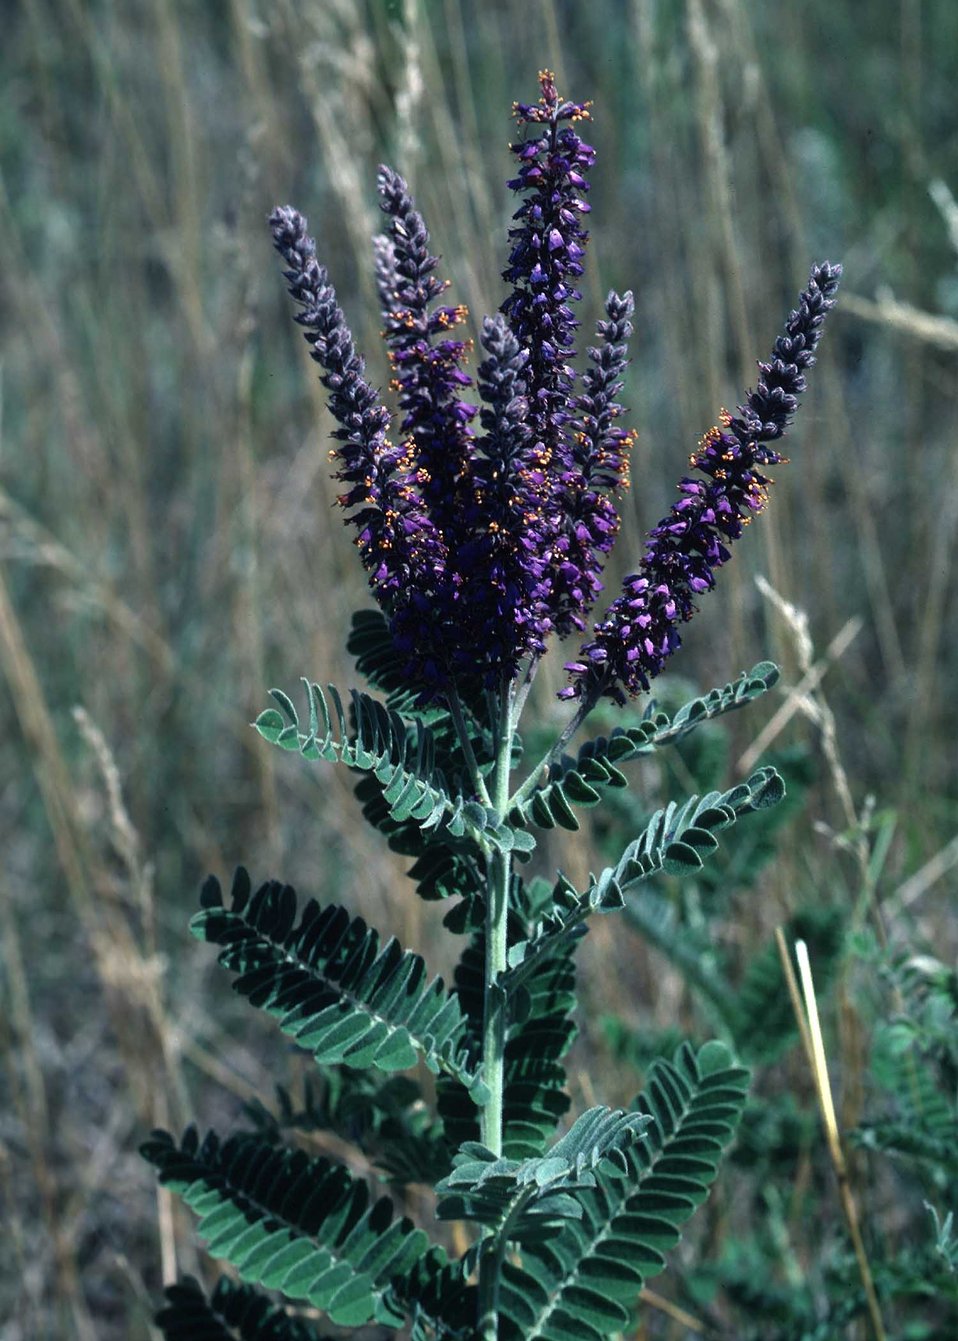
Leadplant Amphora is a native rangeland shrub in South Dakota.